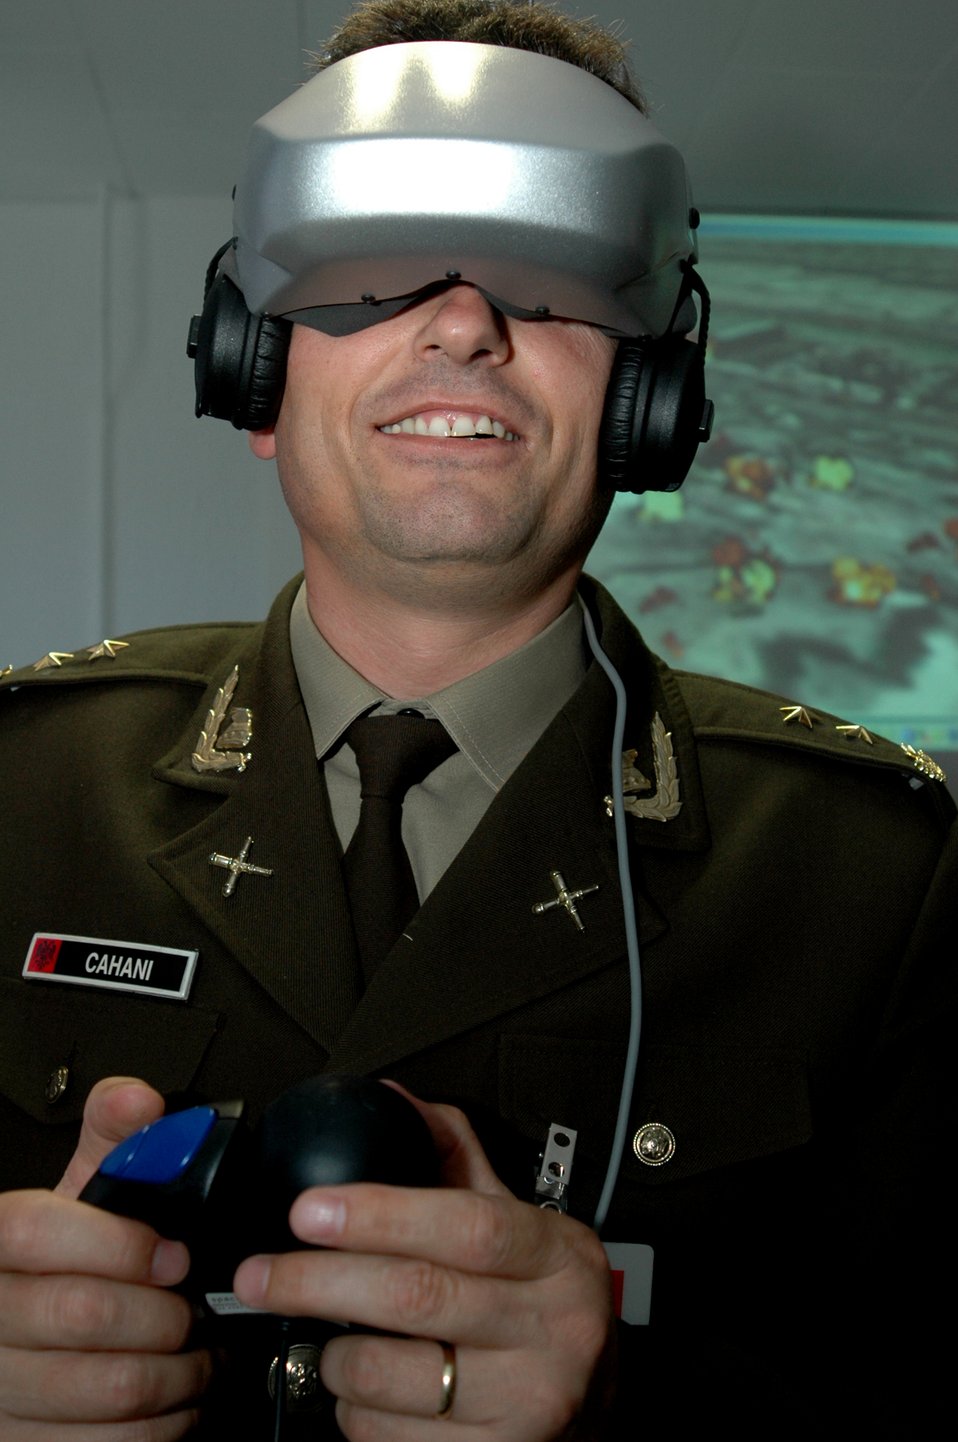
USAFE

RAMSTEIN AIR BASE, Germany -- Albanian Lt. Col. Nazmi Cahani controls the point-of-view through a head-mounted virtual reality display as part of an opposing force demonstration at the Warrior Preparation Center here Sept. 22. Nine Albanian and Slovakian officers toured the center for a familiarization visit Sept. 20 to 23.